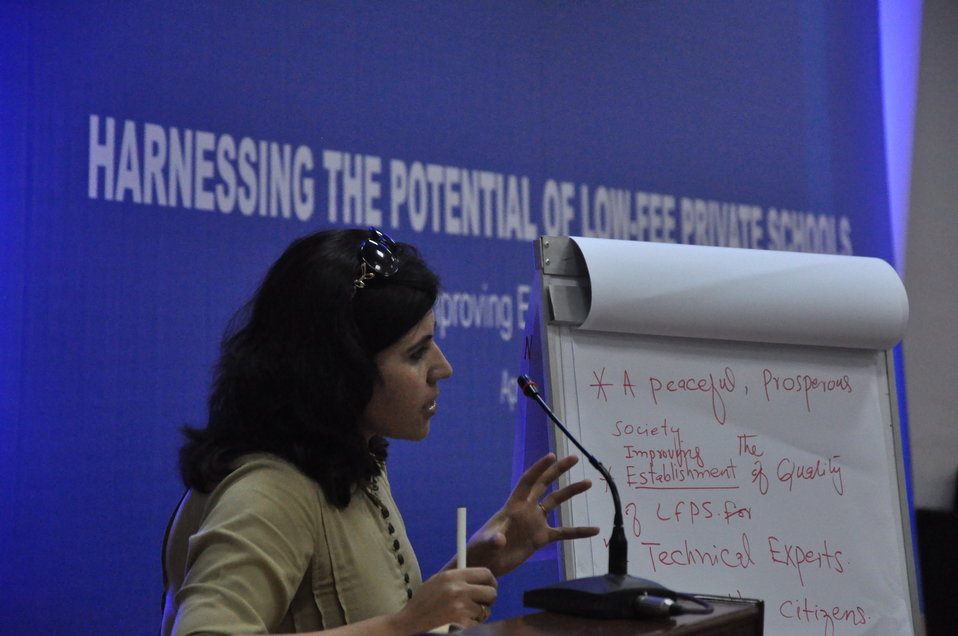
A group leader presenting the recommendations